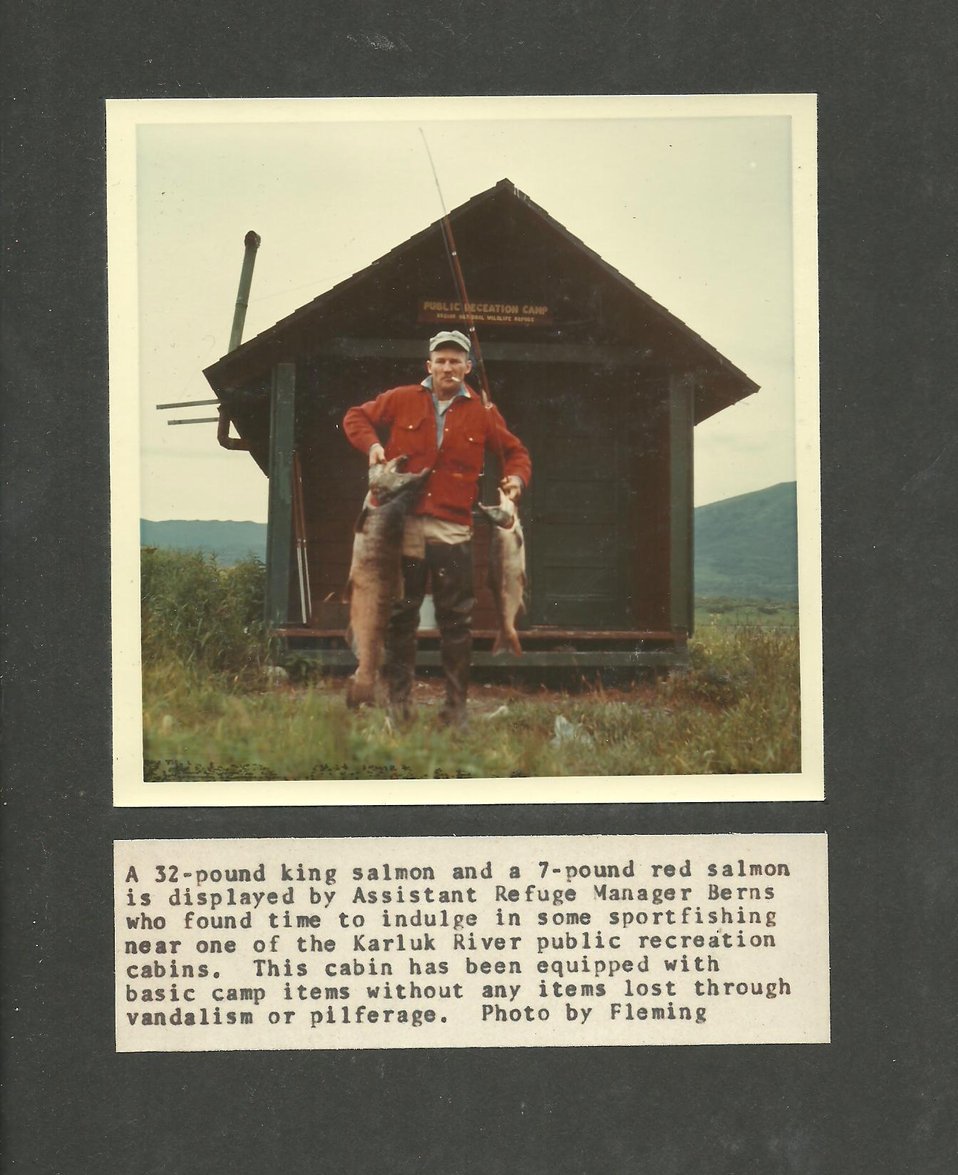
(1966) Refuge Manager Berns

Credit: USFWS

Source and Contact: Kodiak National Wildlife Refuge